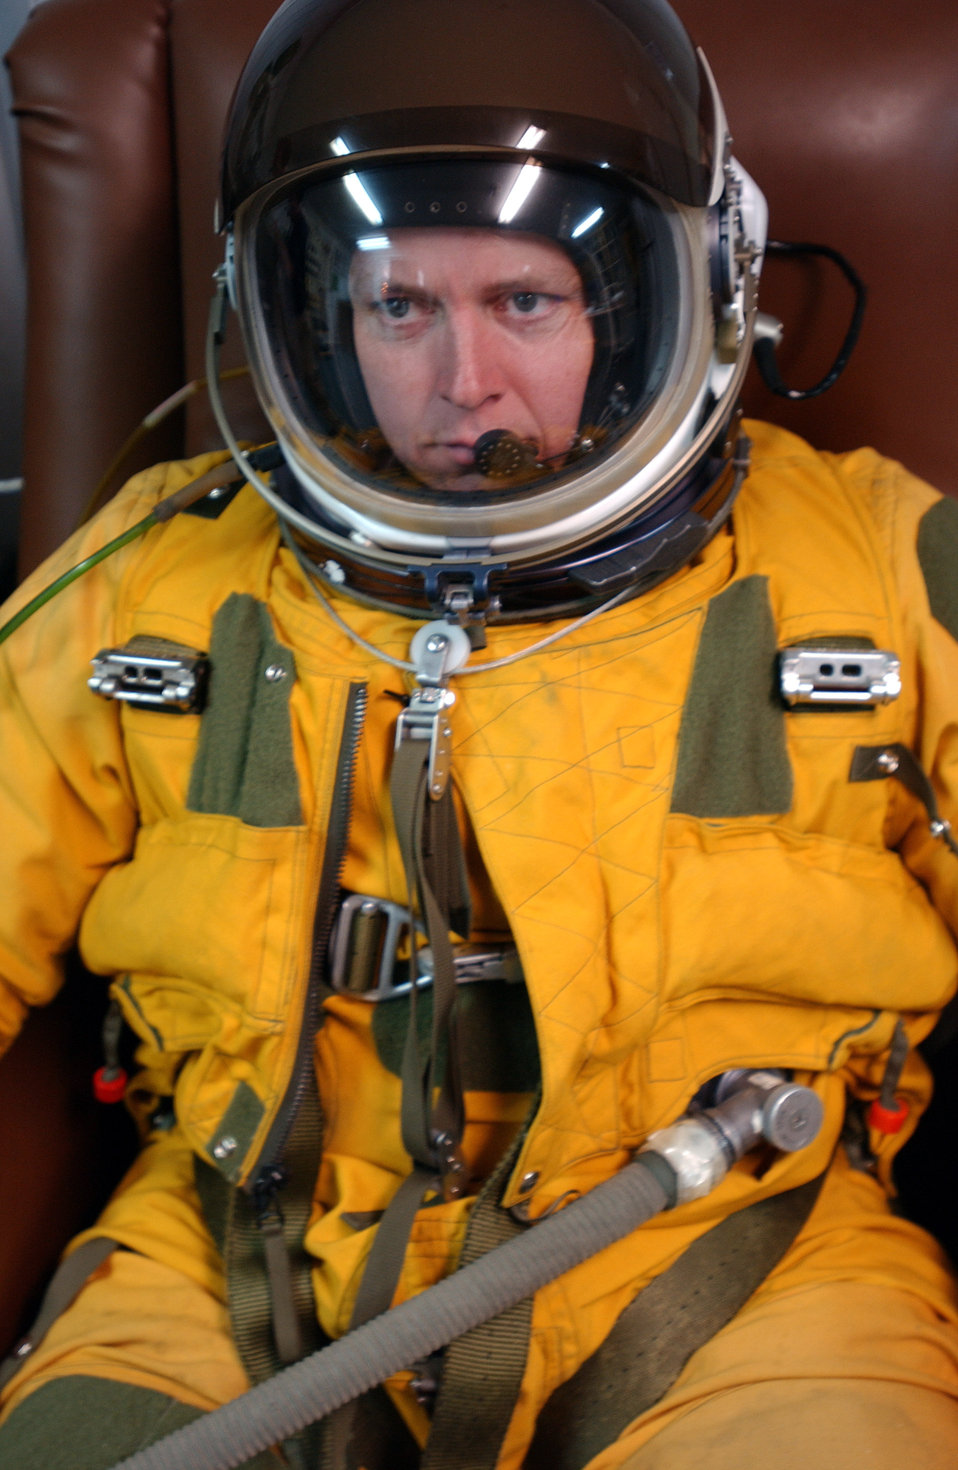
Getting pressure

OPERATION IRAQI FREEDOM -- Maj. John Long, a pilot deployed from the 99th Reconnaissance Squadron, Beale Air Force Base, Calif., to the 363rd Expeditionary Reconnaissance Squadron, waits to be pressurized during a preflight pressure suit check in preparation for a U-2 Dragon Lady mission on April 13. The U-2 is a high altitude-multi intelligence reconnaissance aircraft. It can fly above 70,000 ft and provides near-real-time imagery and signals intelligence to war fighters and national authorities in support of Operation Iraqi Freedom at a forward deployed location in Southwest Asia.